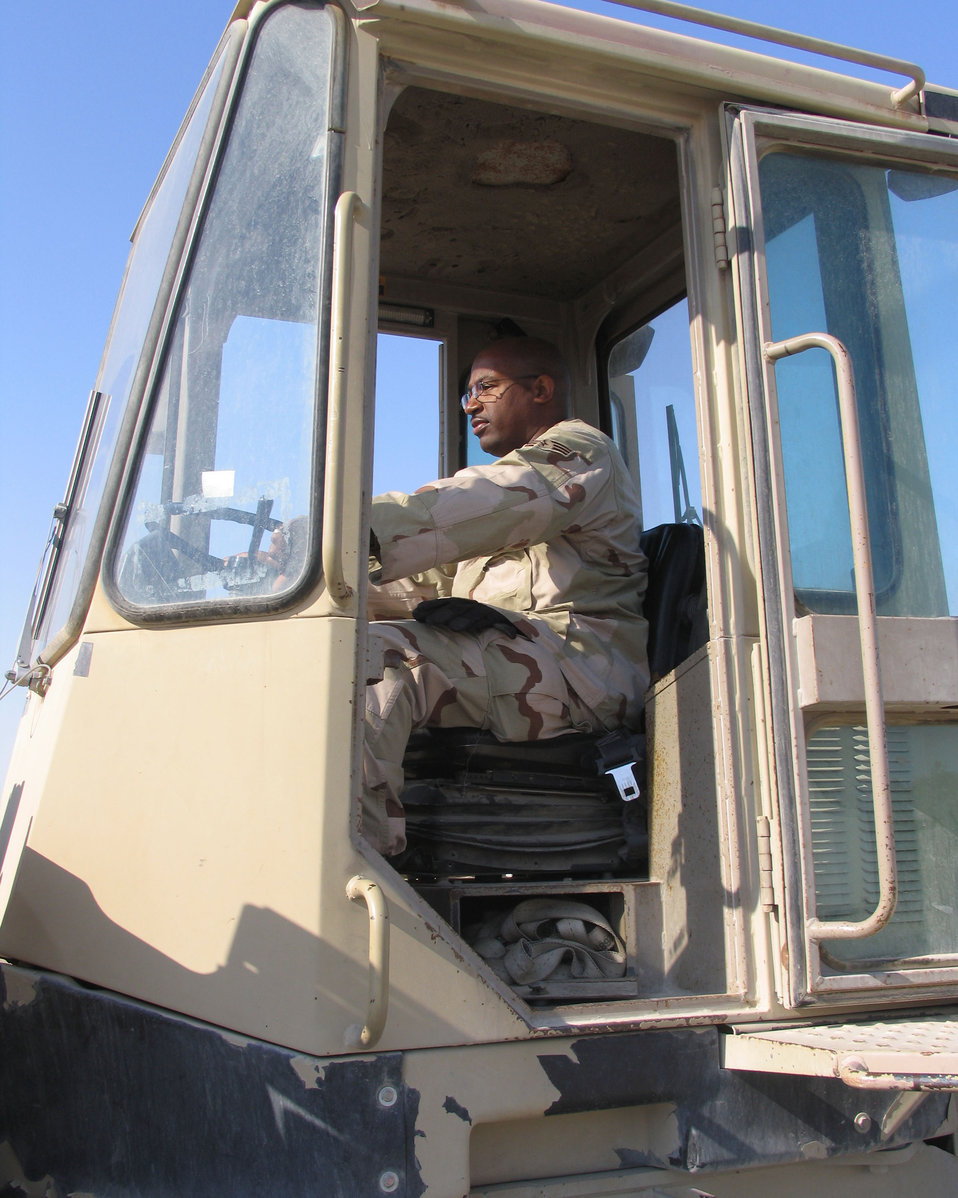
Serving through the season: Senior Airman Douglas Hicks

Senior Airman Douglas Hicks operates a 10,000-pound forklift. Airman Hicks is an air transportation journeyman assigned to the 386th Expeditionary Logistics Readiness Squadron in Southwest Asia, where his duties include configuring aircraft for cargo and personnel transport and providing safety briefings to his team members prior to the start of his shift. He is serving on his first deployment from Dobbins Air Reserve Base, Ga.